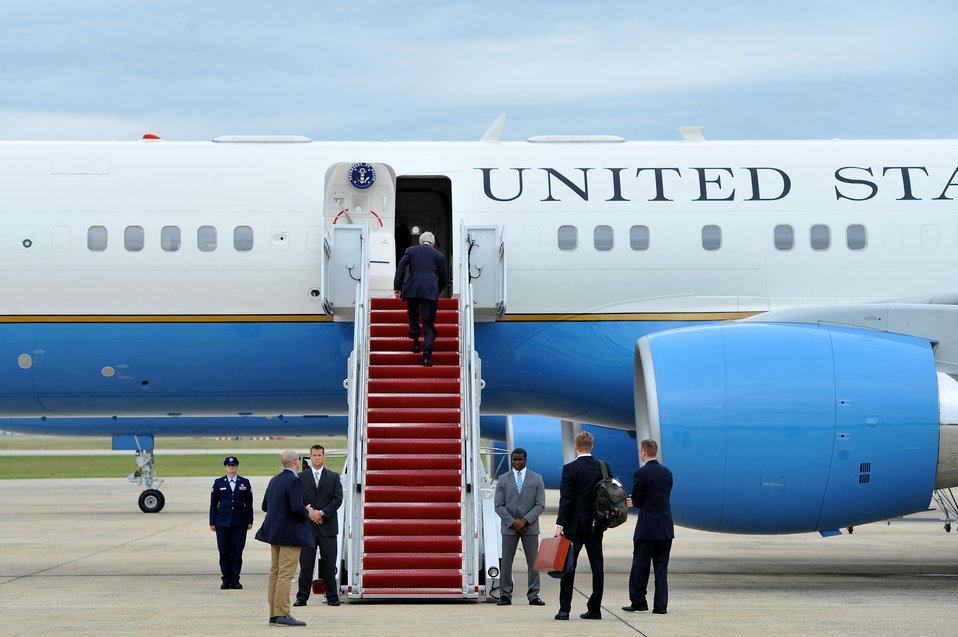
Secretary Kerry Boards Plane to Egypt, Middle East, Europe

U.S. Secretary of State John Kerry steps aboard an Air Force jet as he prepares to depart from Andrews Air Force Base for a trip to Egypt, the Middle East, and Europe for consultations on Iraq and other regional matters on June 21, 2014.